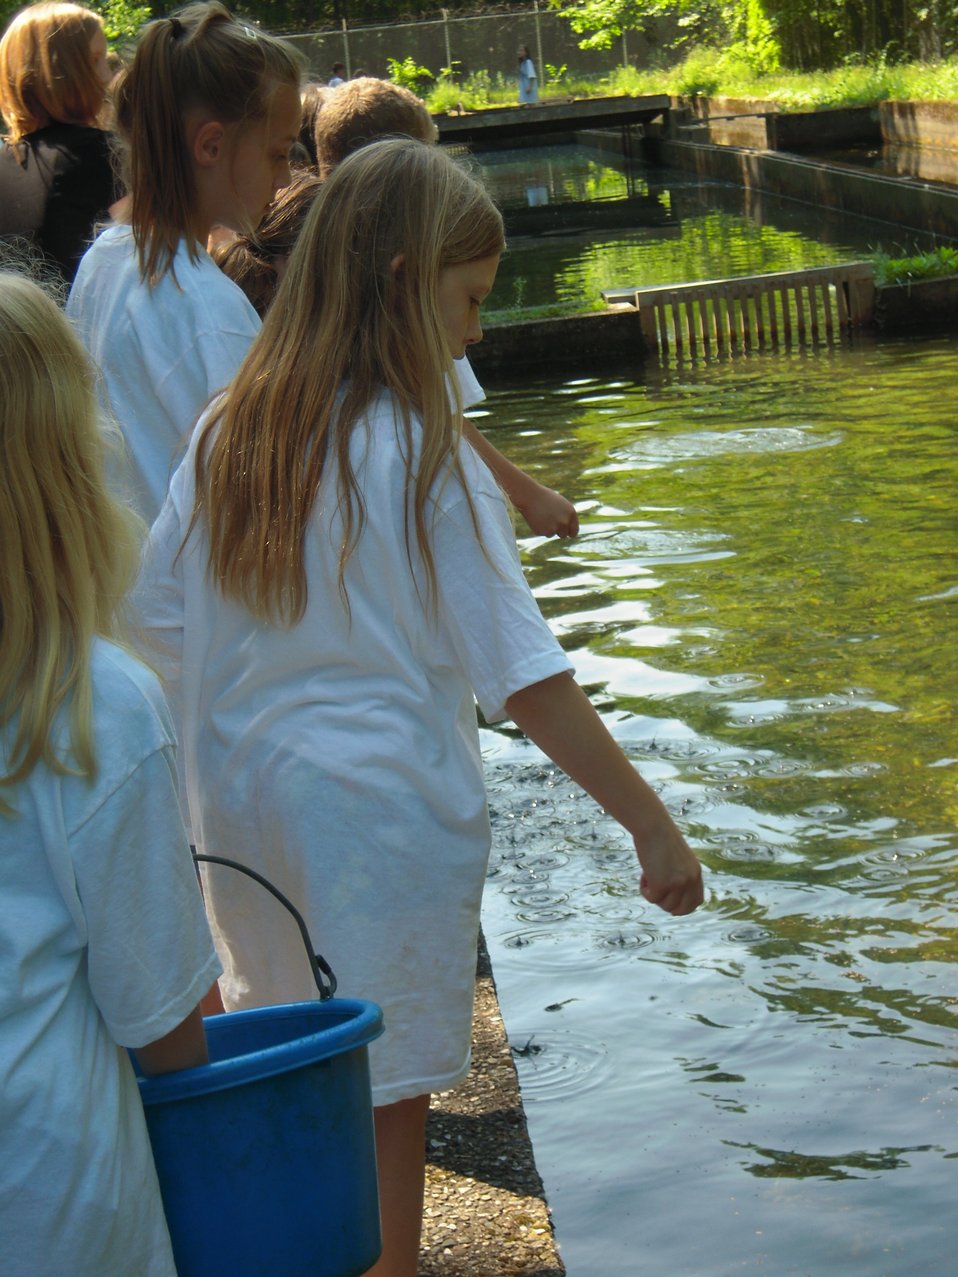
Feeding fish